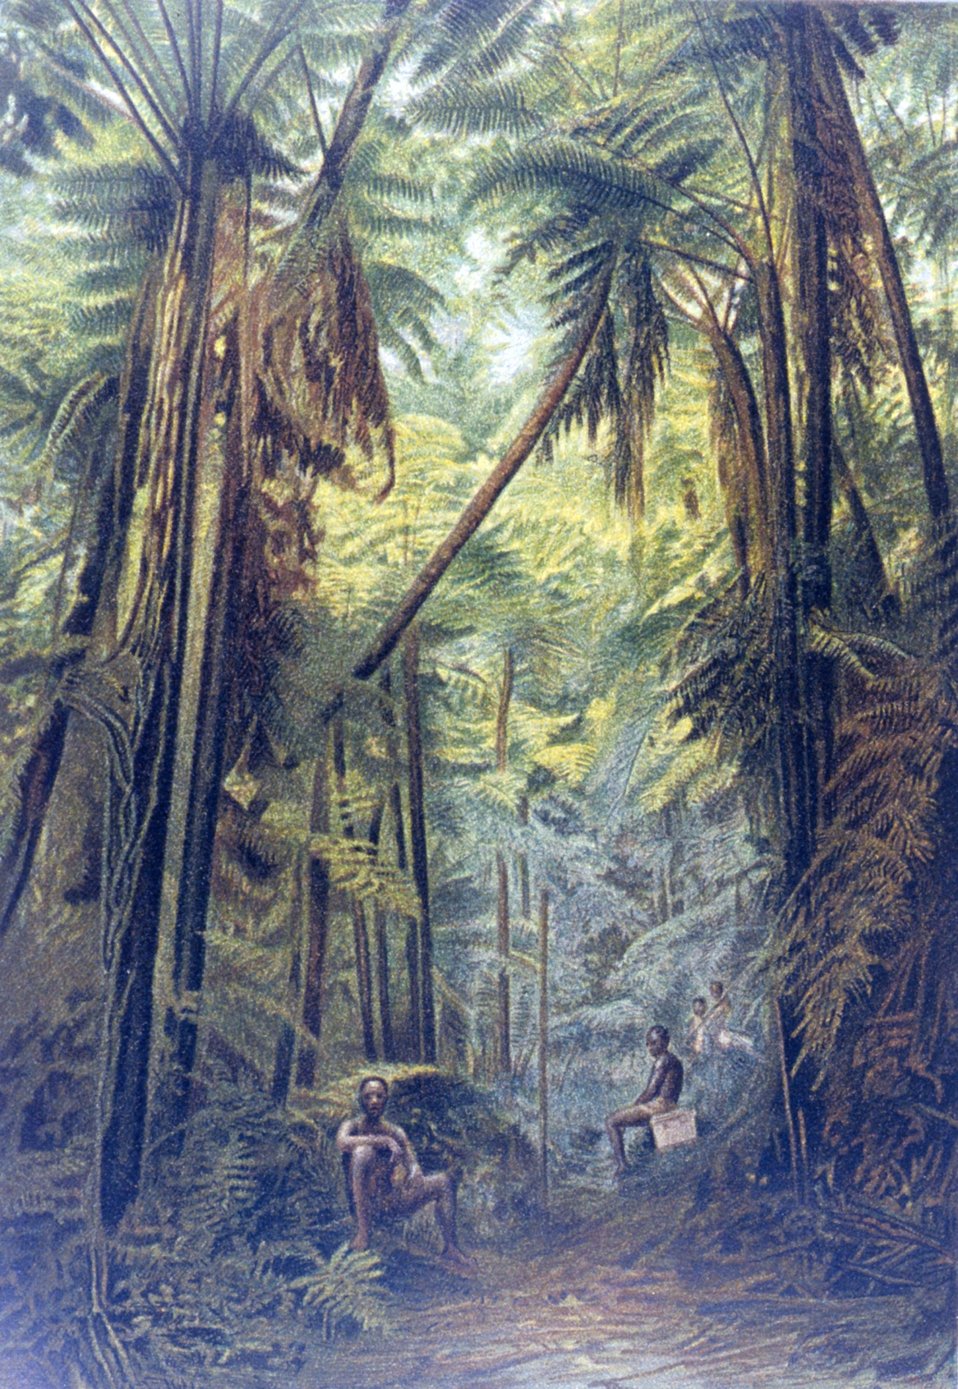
Fern woods (cyathea) on Cameroon Peak at 1800 meters. This mountain is one of three places on earth with an annual rainfall over 400 inches. P. 104. In: 'Aus den Tiefen des Weltmeeres' by Carl Chun, 1903. Call No. Q115.V15 1903.